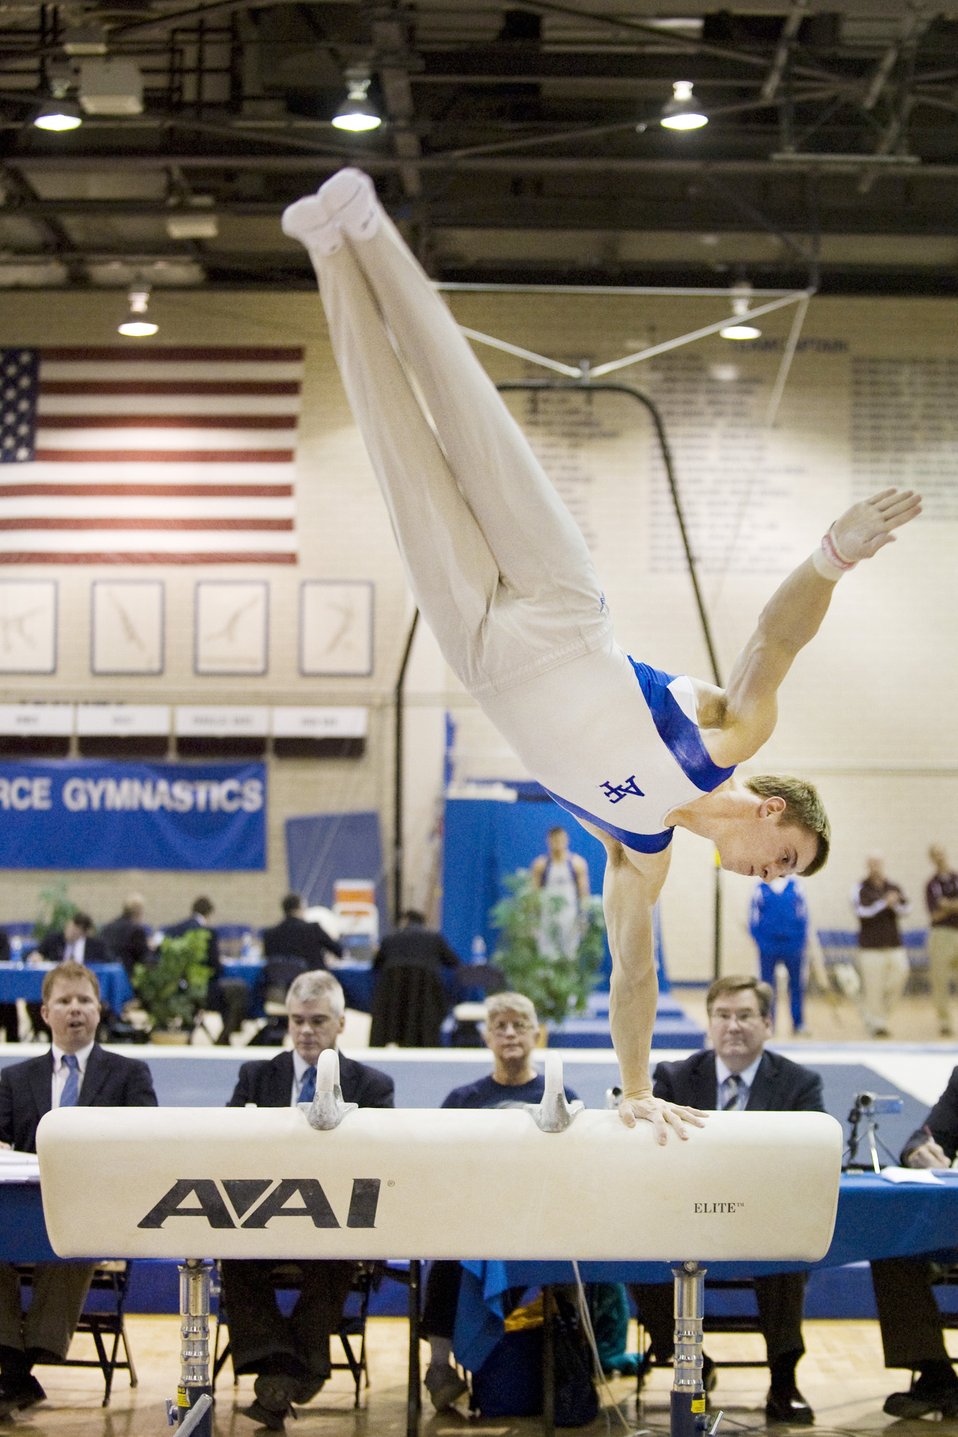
USA Gymnastics Championships

Air Force sophomore Chase Nobles performs on the pommel horse during the USA Gymnastics Championships held at the U.S. Air Force Academy's Cadet Gym in Colorado March 27, 2010. Chase was named USAG All American, for his fourth place finish with a score of 13.700